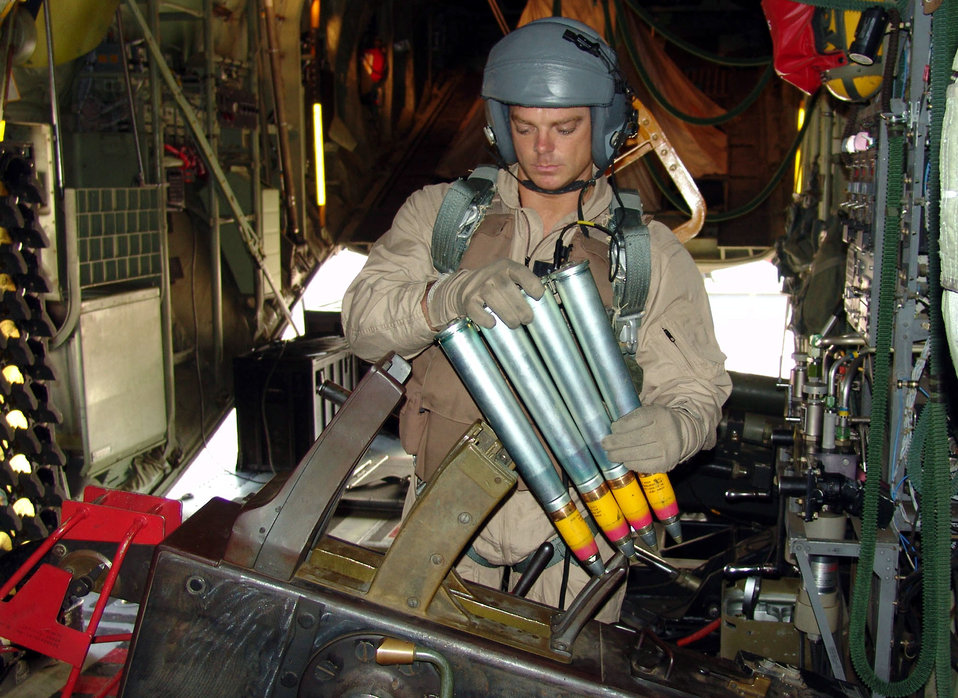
A spooky gunner

SOUTHWEST ASIA -- Tech. Sgt. Jim Jochum loads a 40 mm gun on an AC-130U Spooky Gunship. Sergeant Jochum is an aerial gunner assigned to the Air Force Special Operations Detachment at a forward-deployed location. He completed his 150th combat mission on an AC-130U on July 6. The aircraft is armed with a 25 mm gun, 40 mm cannon and a 105 mm cannon. Its primary missions include close-air support for convoys, air interdiction of targets and force protection for base defense. Sergeant Jochum is deployed from Hurlburt Field, Fla.